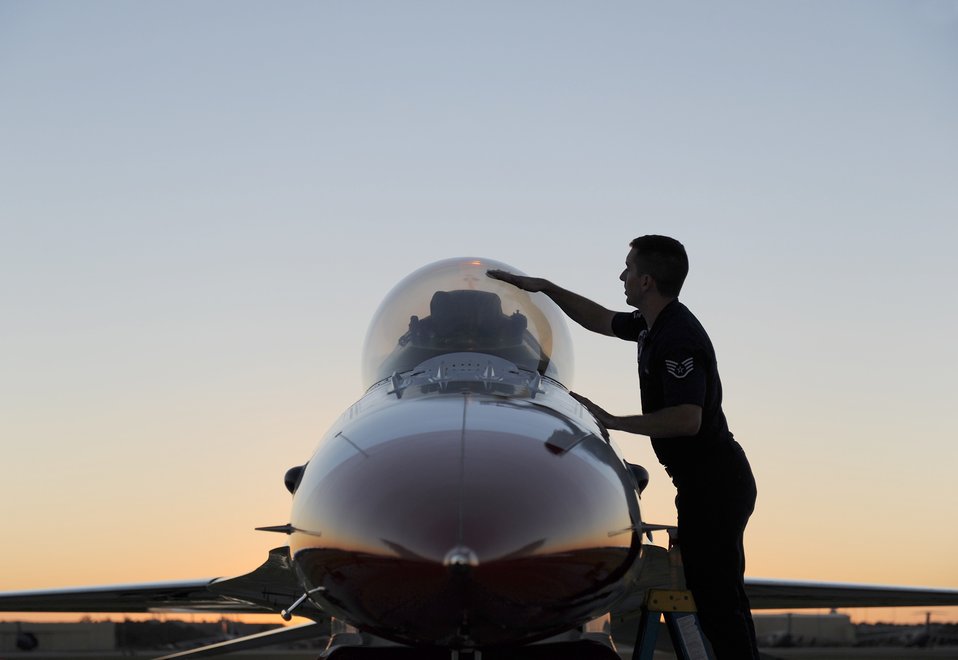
Thunderbirds at Lackland

Staff Sgt. Zachary French wipes down his jet's canopy during post-flight maintenance Nov. 7, 2010, following the Thunderbirds aerial demonstration at the AirFest 2010 at Lackland Air Force Base, Texas. Sergeant French is a Thunderbird crew chief.